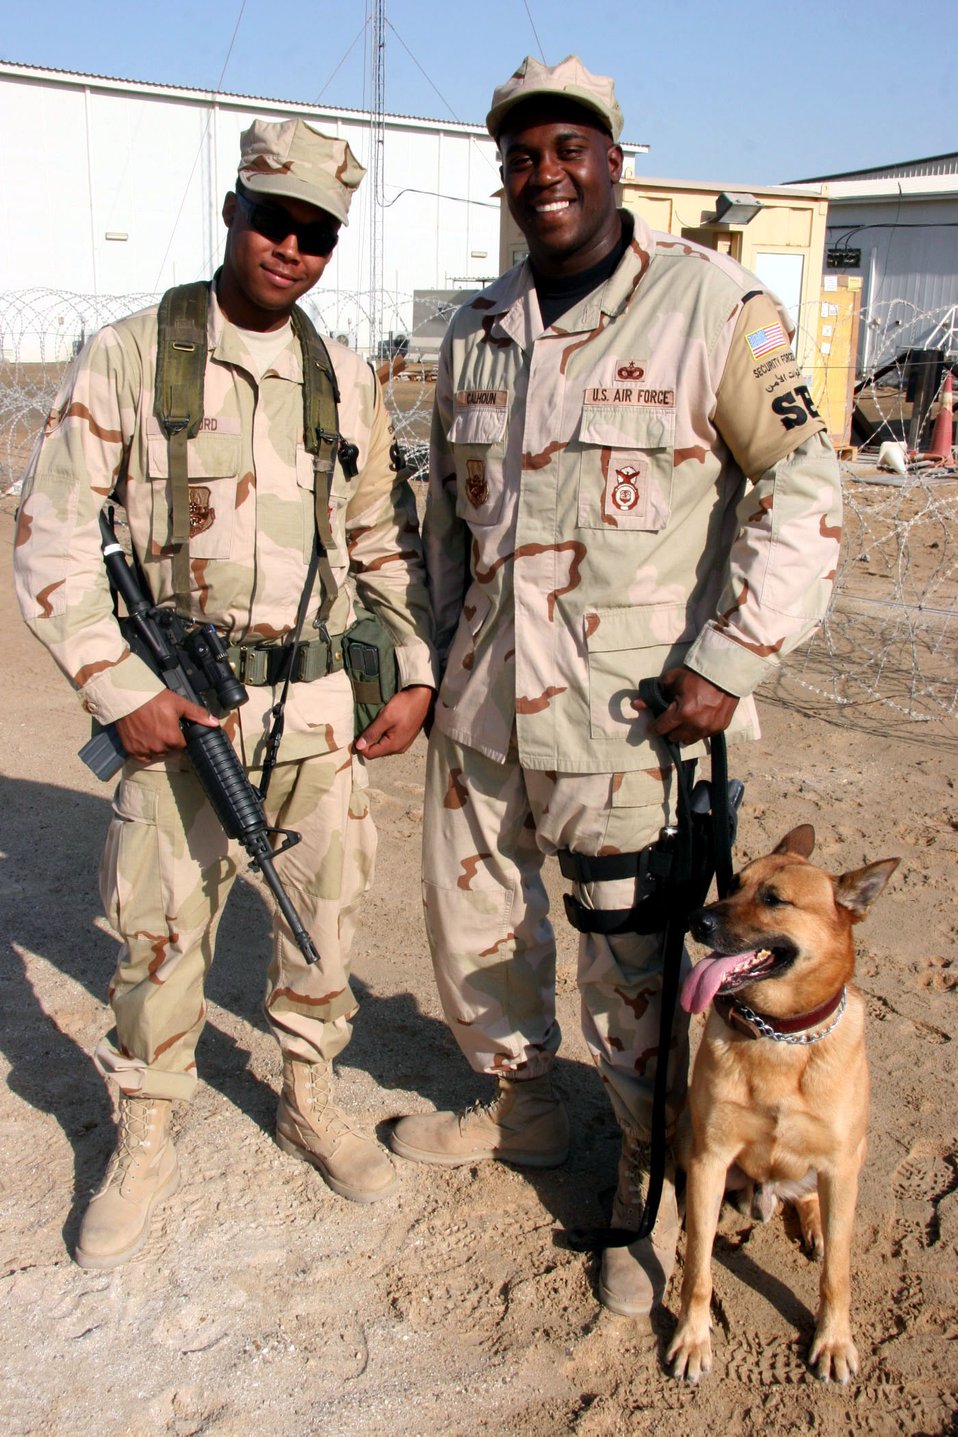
Brothers spent first deployment together

Airman 1st Class Dandre Bufford and Staff Sgt. Malik Calhoun are brothers assigned to the 380th Expeditionary Security Forces Squadron, Southwest Asia. Sergeant Calhoun, who is a K-9 handler deployed from the 52nd Security Forces Squadron, Spangdahlem Air Base, Germany, surprised his little brother Airman Bufford, who is deployed from the 31st SFS, Aviano Air Base, Italy, Nov. 21, when they were reunited after being separated from more than two years.